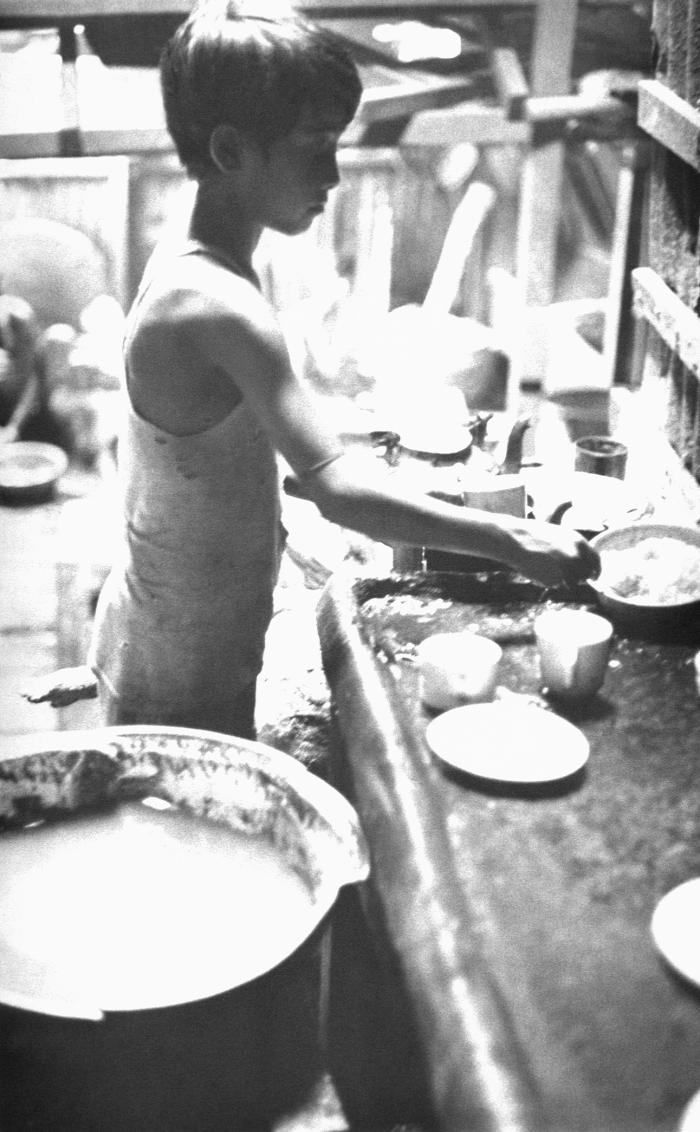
This young school-aged boy was in the process of adding sugar to a pot of tea in the food preparation area of a Bangladesh eating establishment. This photograph provided by Dr. Stan Foster, and captured by Pierre Claquin, M.D., B.A.C., who at the time was a member of the World Health Organization's Smallpox Eradication Program. It was part of a series photographed by former E.I.S. officer, Stanley O. Foster M.D., M.P.H., and was one of a series entitled 'The Story of One Smallpox Jeep', which depicted the travails faced by the jeep, and its occupants of public health practitioners, as they road through the Bangladesh countryside in an attempt to eradicate smallpox from the country.